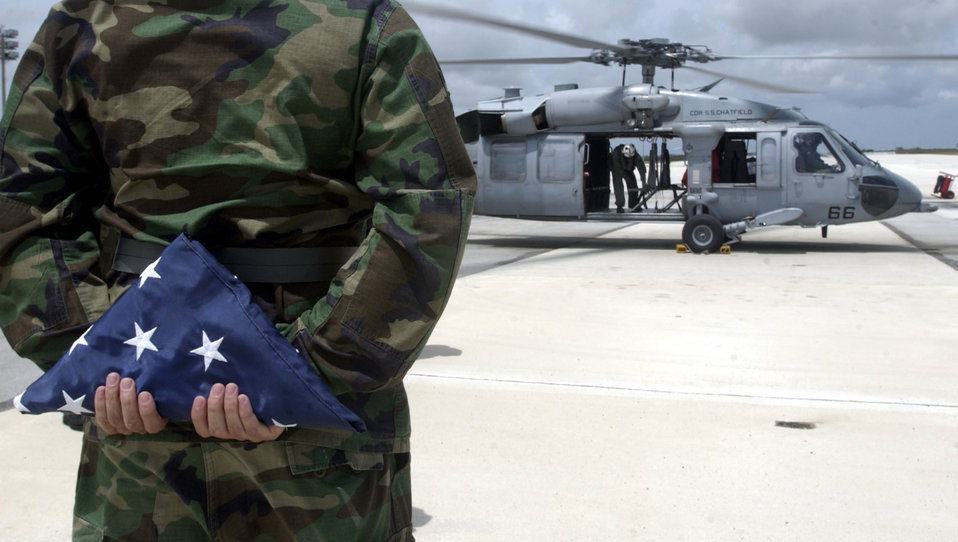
Up and away

ANDERSEN AIR FORCE BASE, Guam -- Staff Sgt. Jason Howland holds a U.S. flag while he prepares to board a helicopter for a re-enlistment ceremony. The re-enlistment took place 500 feet over nearby Sigua Falls. Sergeant Howard is assigned to the 36th Civil Engineer Squadron.